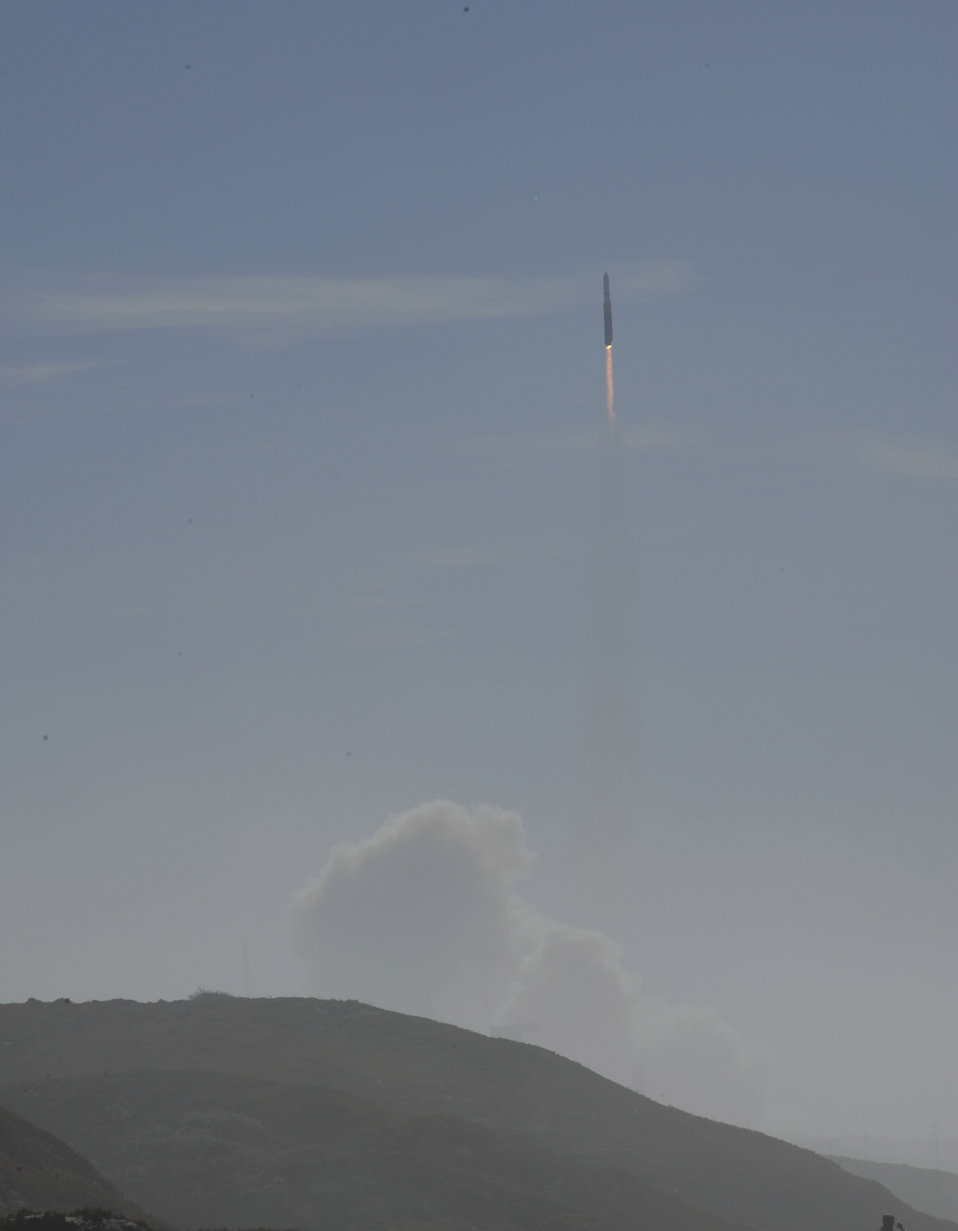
Delta IV launches

A Delta IV Heavy Launch Vehicle was launched Jan. 20, 2011, at Vandenberg Air Force Base, Calif. The rocket ever to launch carried a national security payload for the National Reconnaissance Office.